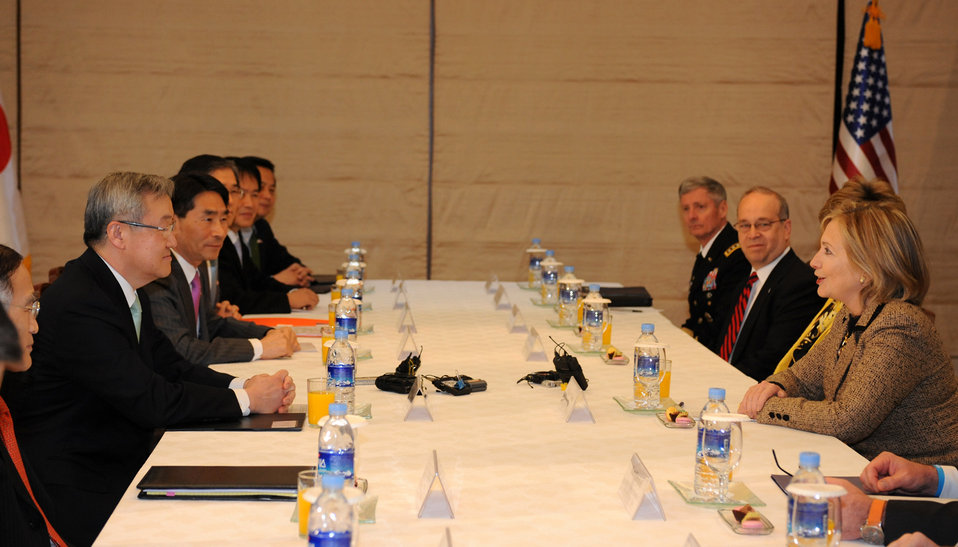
Secretary Clinton, Ambassador Stephens and Others Listen to Republic of Korea Foreign Minister Kim Sung-hwan

U.S. Secretary of State Hillary Rodham Clinton, U.S. Ambassador to Korea Kathleen Stephens, and others listen to remarks by Republic of Korea Foreign Minister Kim Sung-hwan at his residence in Seoul, South Korea, on April 16, 2011.